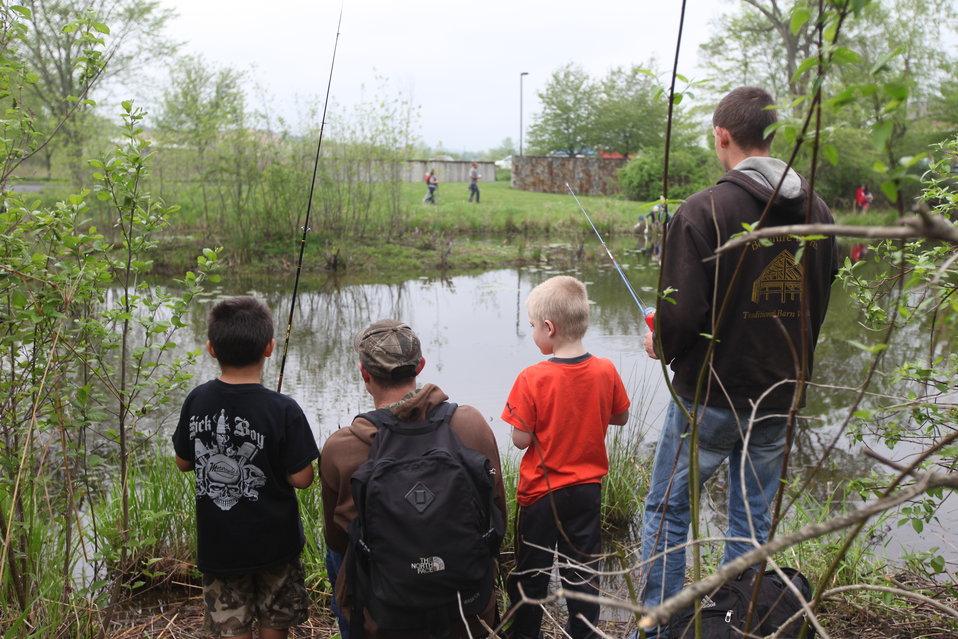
Fishing Derby